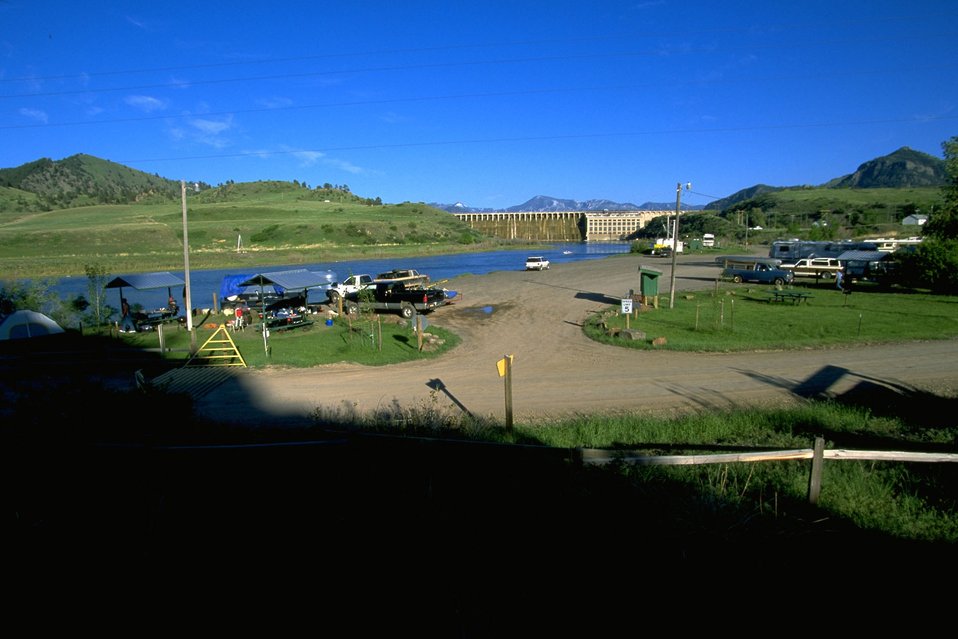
Holter Dam Campground along the Missouri River - dam is in background